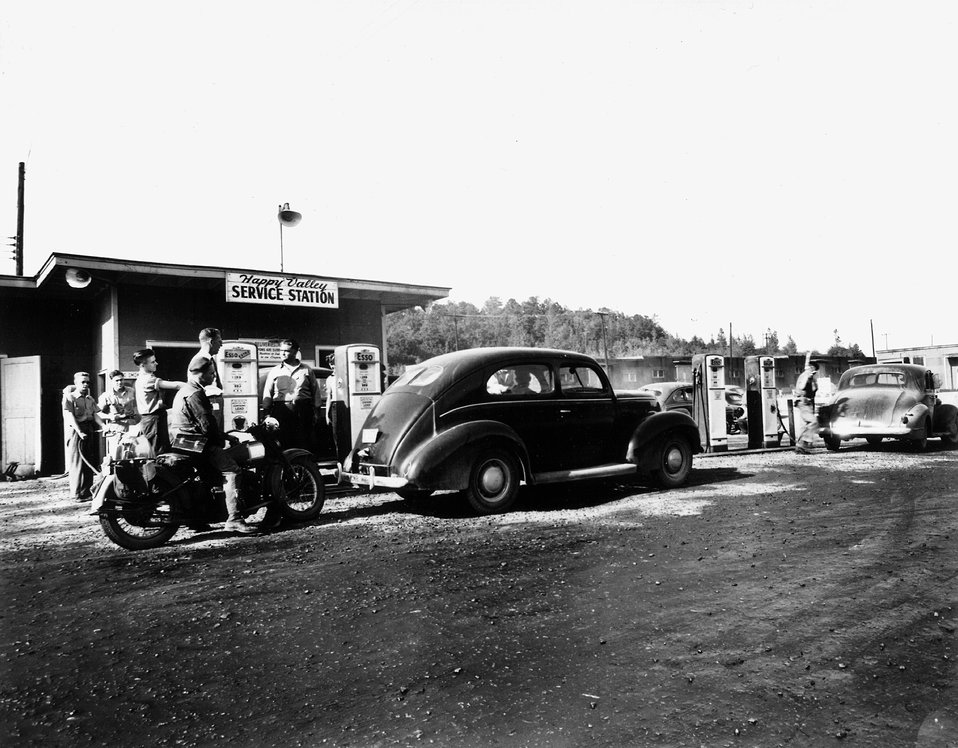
Happy Valley service station. The solution of the K-25 site forced the Jones Construction Company to build housing facilities for workers. Jones camp, nicknamed 'Happy Valley' by its inhabitants, eventually had a total population of about 15,000. c. 1943